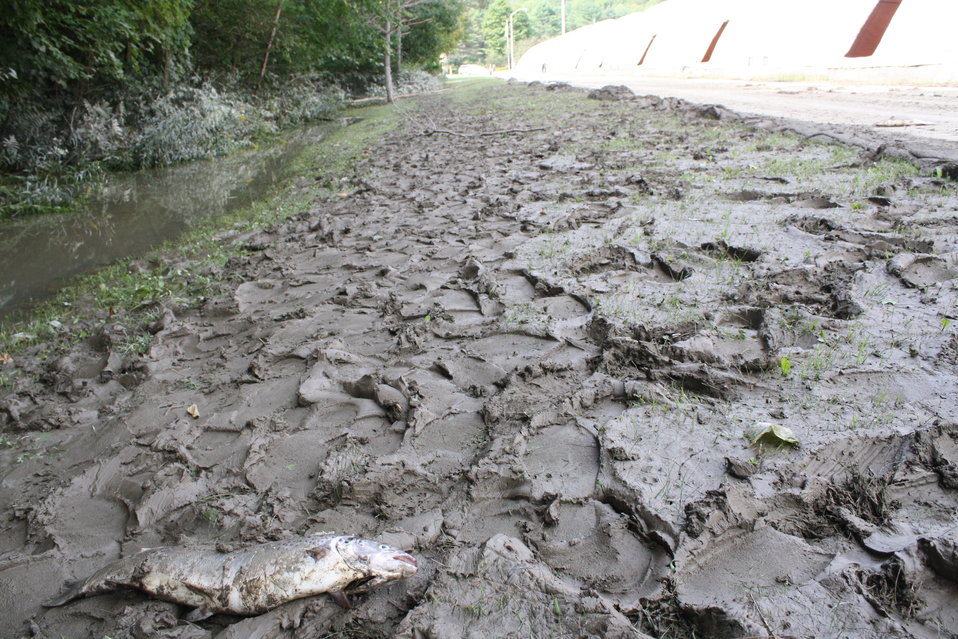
Dead fish, sediment after Hurricane Irene flood event

High flood waters breached some circular fish rearing pools at White River National Fish Hatchery during Hurricane Irene. Some fish escaped, and were left stranded by receding flood waters.

Significant amounts of river sediment were deposited on White River National Fish Hatchery grounds.